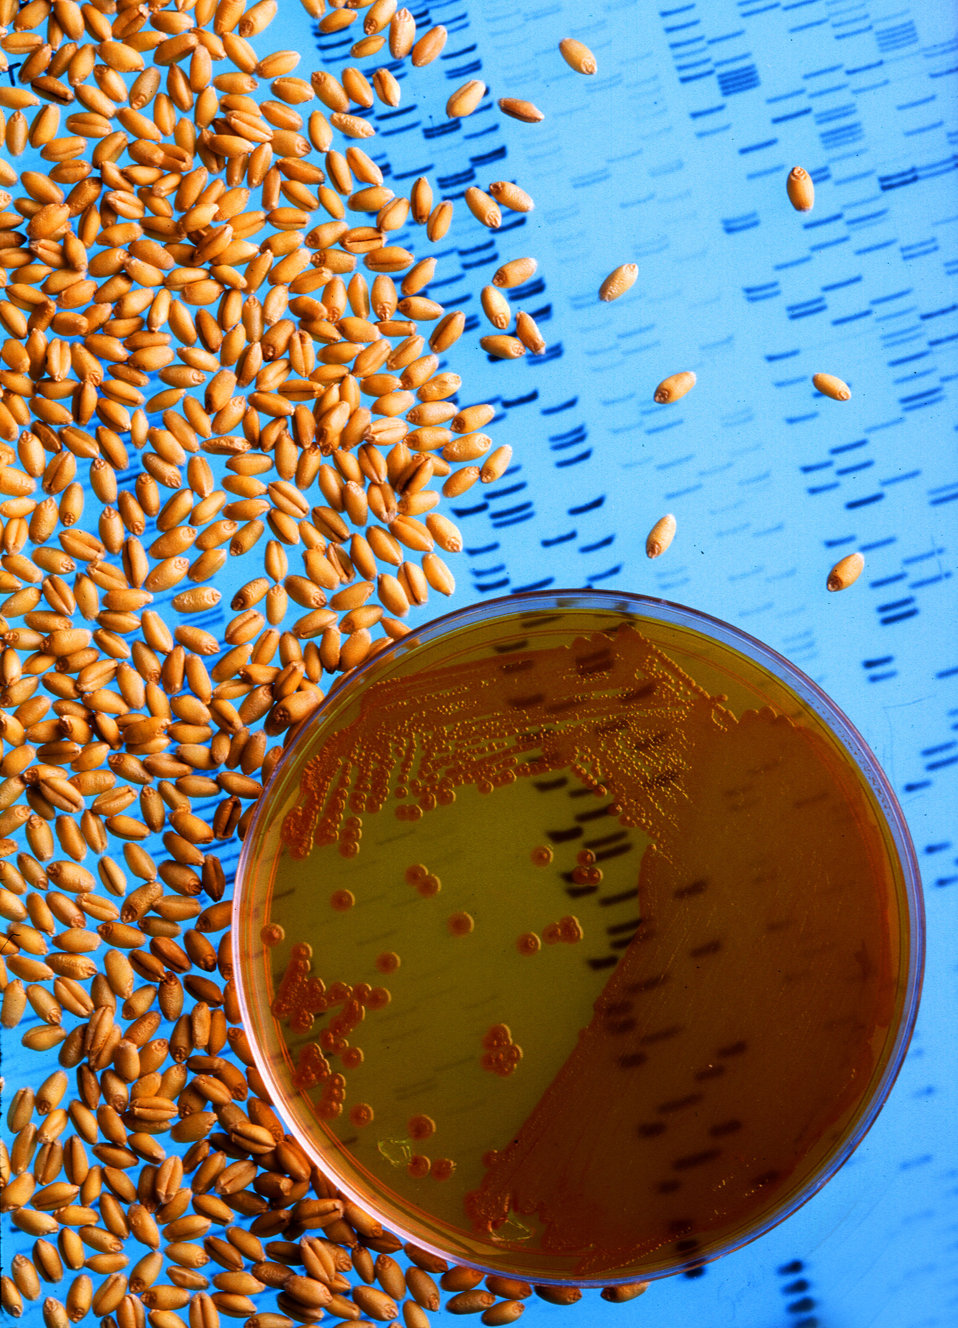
Wheat seeds treated with bacteria like those colonized in this petri dish are nearly immune to wheat take-all, a root-destroying fungal disease. The sequencing gel in the background bears the genetic code for bacterial enzymes that synthesize natural antibiotics.